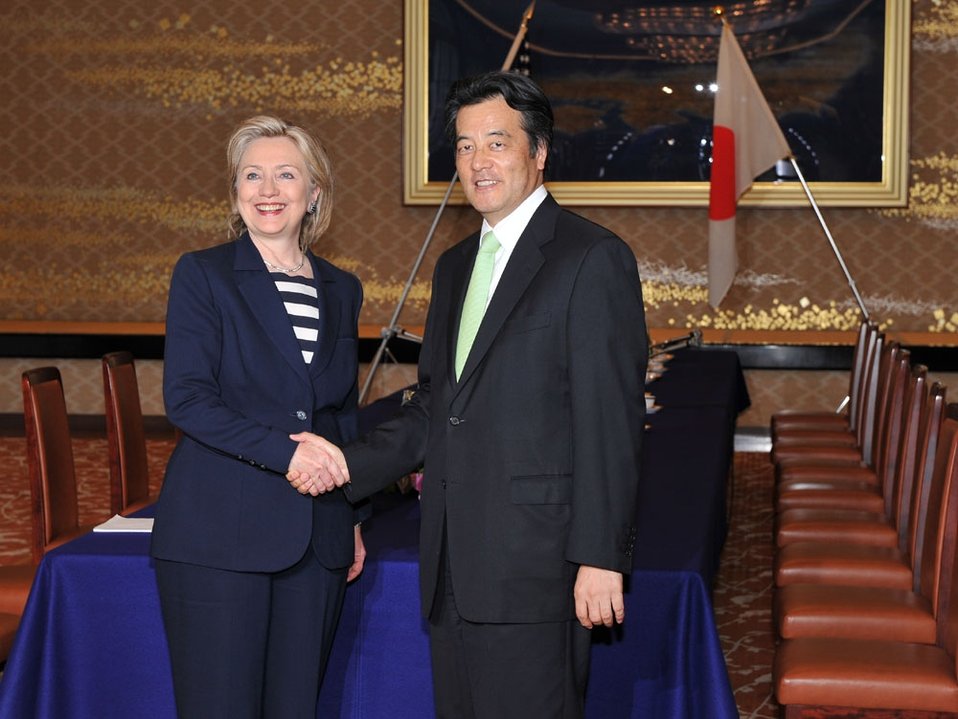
Secretary Clinton Meets Japanese Foreign Minister Katsuya Okada

Visiting Tokyo, U.S. Secretary of State Hillary Rodham Clinton meets Japanese Foreign Minister Katsuya Okada at the Iikura House of the Foreign Ministry, May 21, 2010.